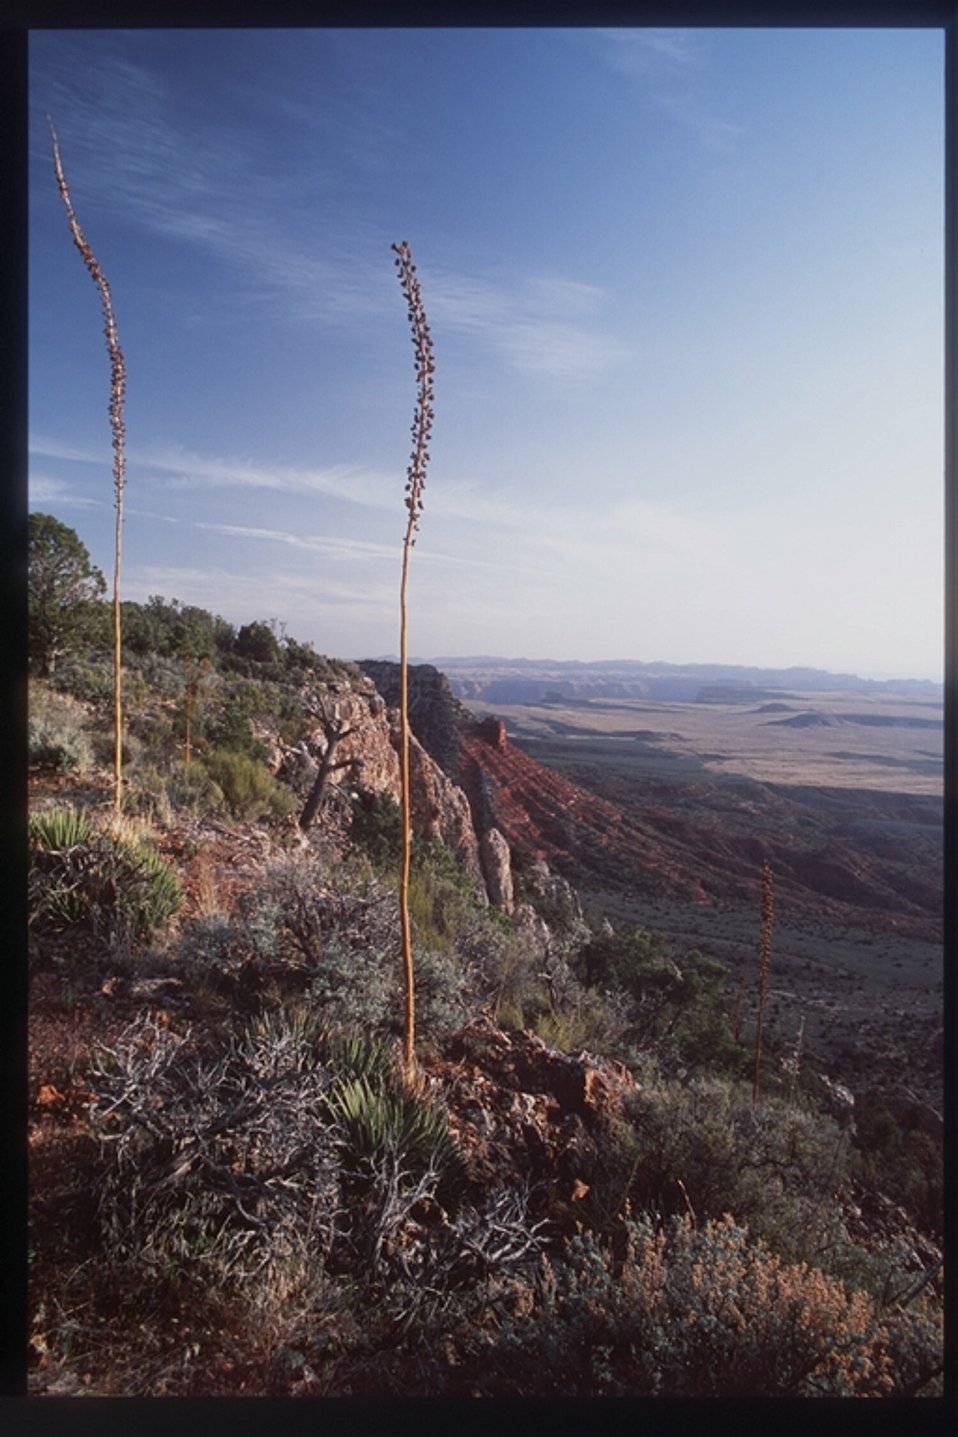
A postcard-like photograph captures the simple beauty and majestic grandeur of the Parashant National Monument.